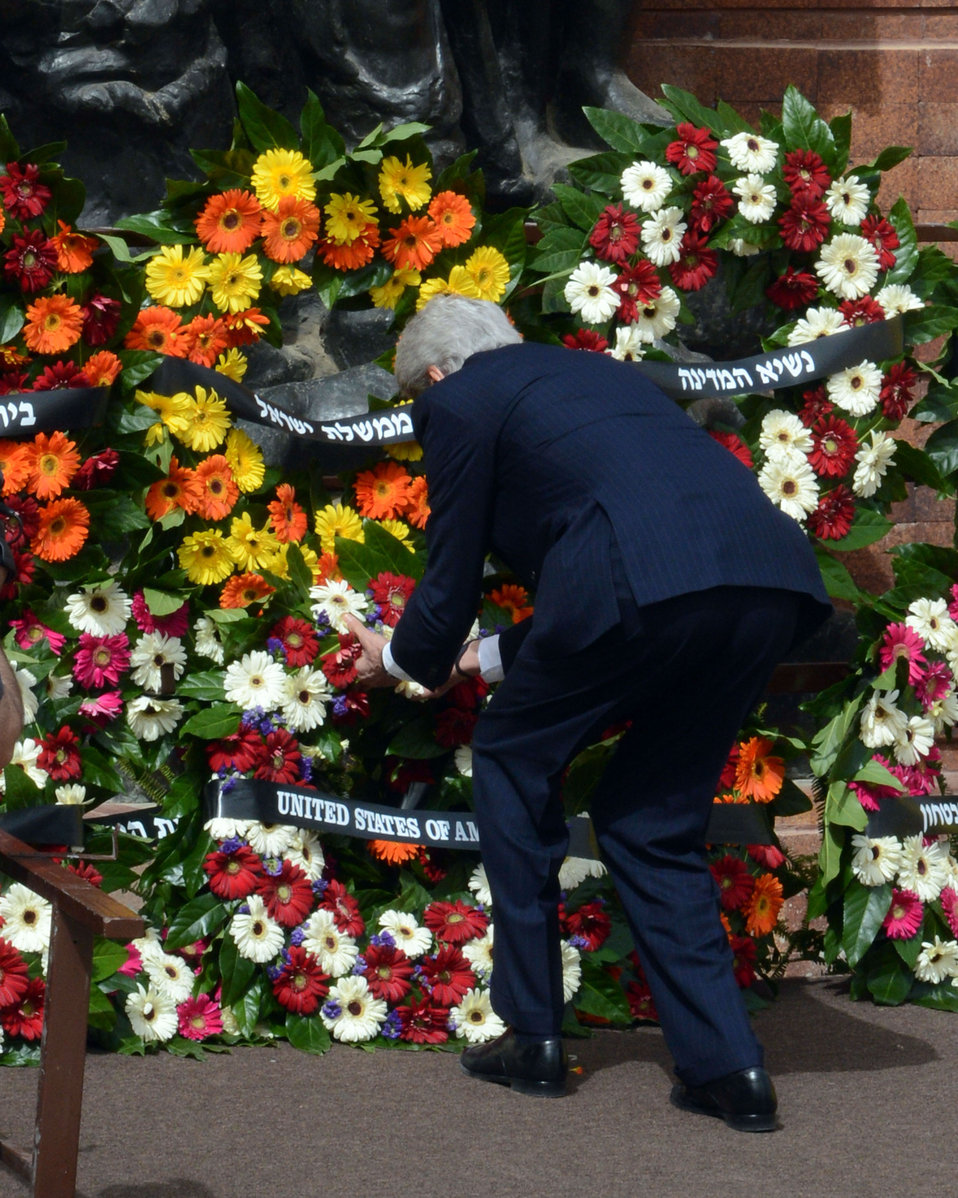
Secretary Kerry Lays a Wreath at Yad Vashem

U.S. Secretary of State John Kerry lays a wreath at Yad Vashem during a ceremony in Jerusalem for Israel's Holocaust Remembrance Day, April 8, 2013.